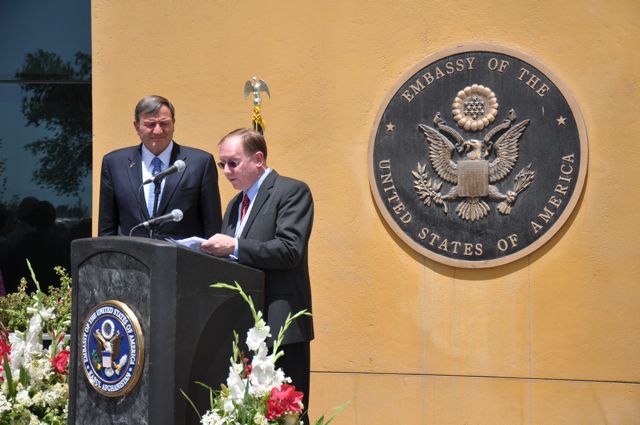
Memorial Day at US Embassy in Kabul

Ambassador Eikenberry and Ambassador Keith